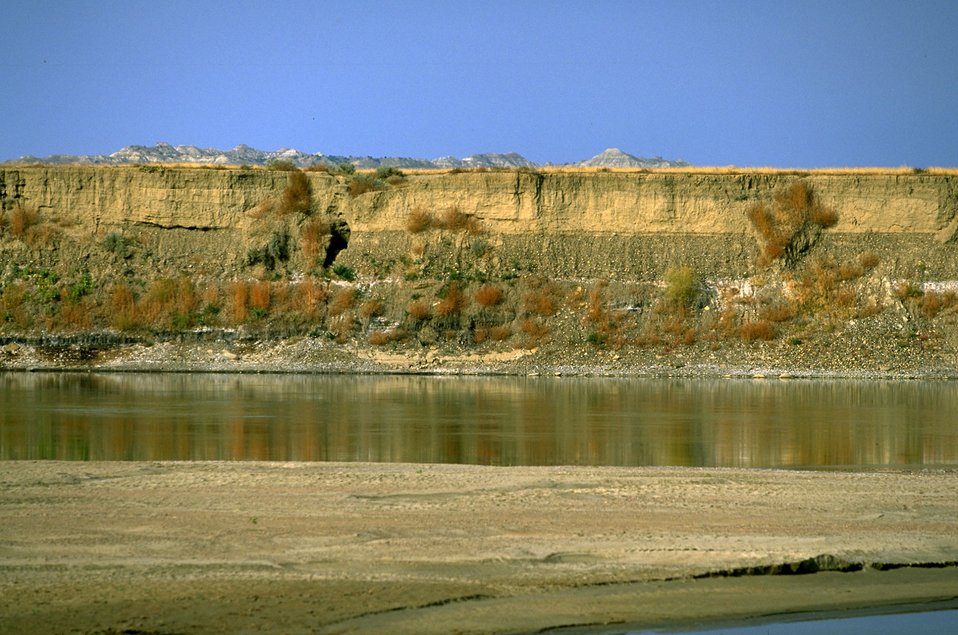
Scenic view of a Yellowstone River bank with badlands in the background